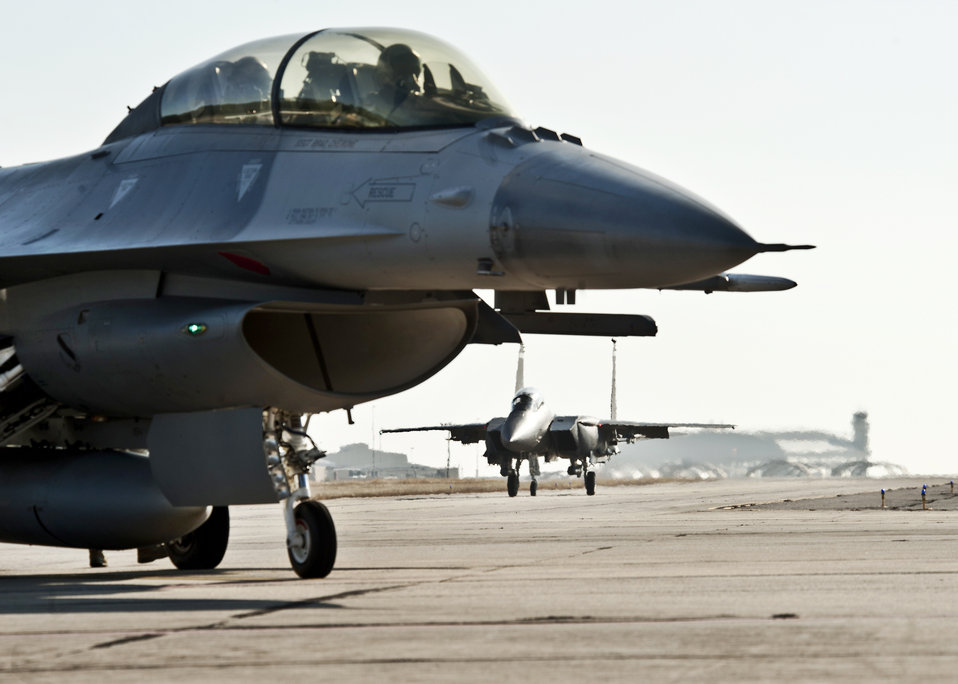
F-15E Strike Eagles get new radar

An F-16 Fighting Falcon waits for clearance as an F-15E Strike Eagle taxis in the distance Jan. 18, 2011, at Eglin Air Force Base Fla. Both aircraft belong to the 46th Test Wing.